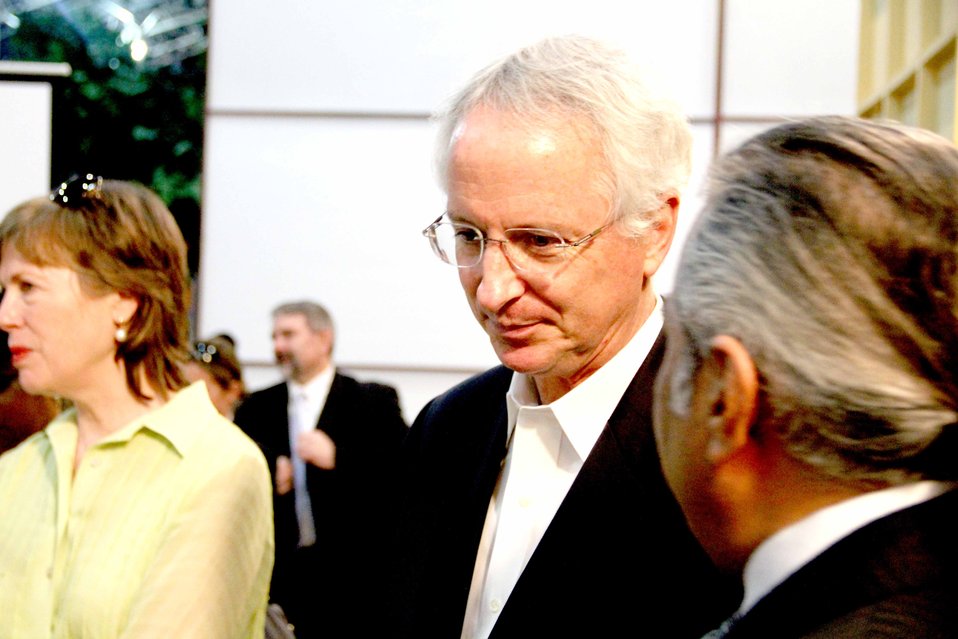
U.S. Ambassador’s Visit to Sim Sim Hamara Highlights U.S. Commitment to Improved Children’s Education in Pakistan at Lahore on 28 April, 2012